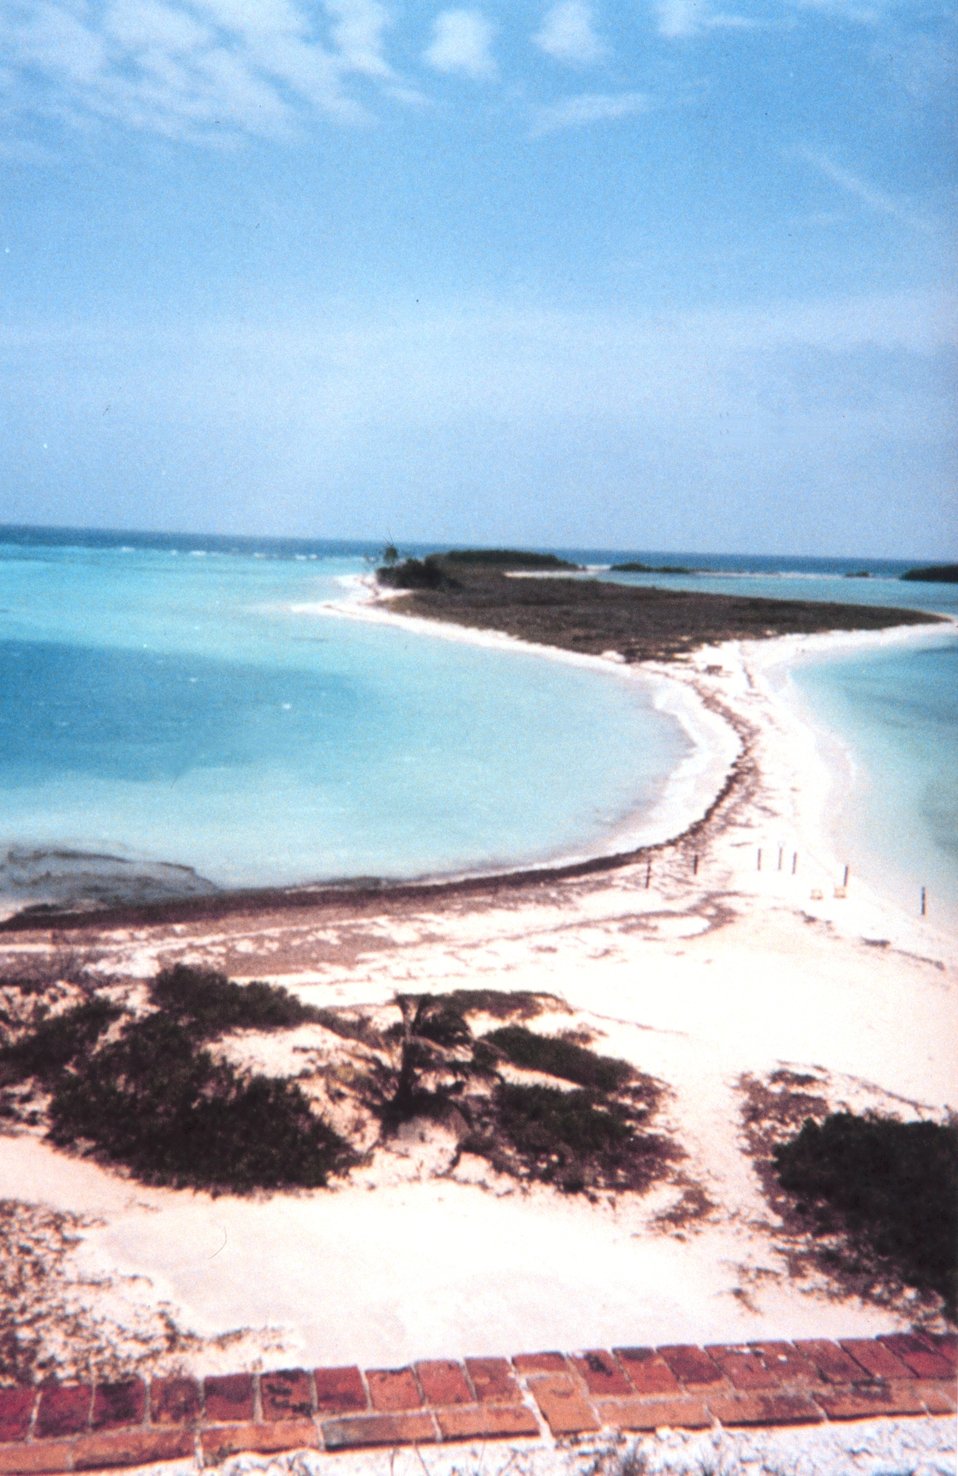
A view of the bird refuge at Dry Tortugas National Park.